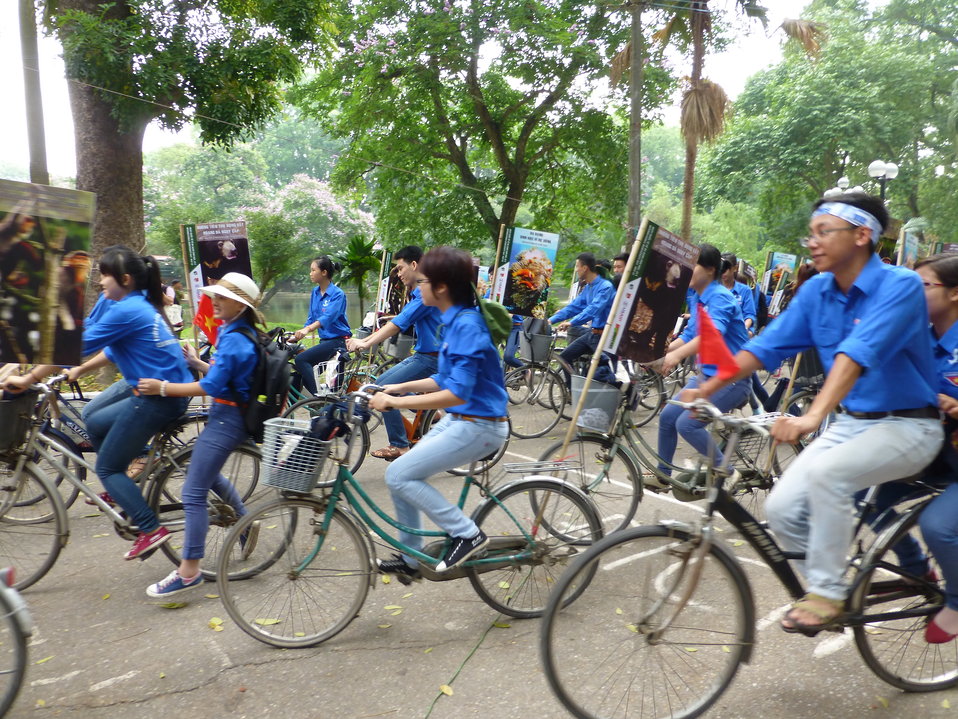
USAID Supports International Day for Biological Diversity in Hanoi